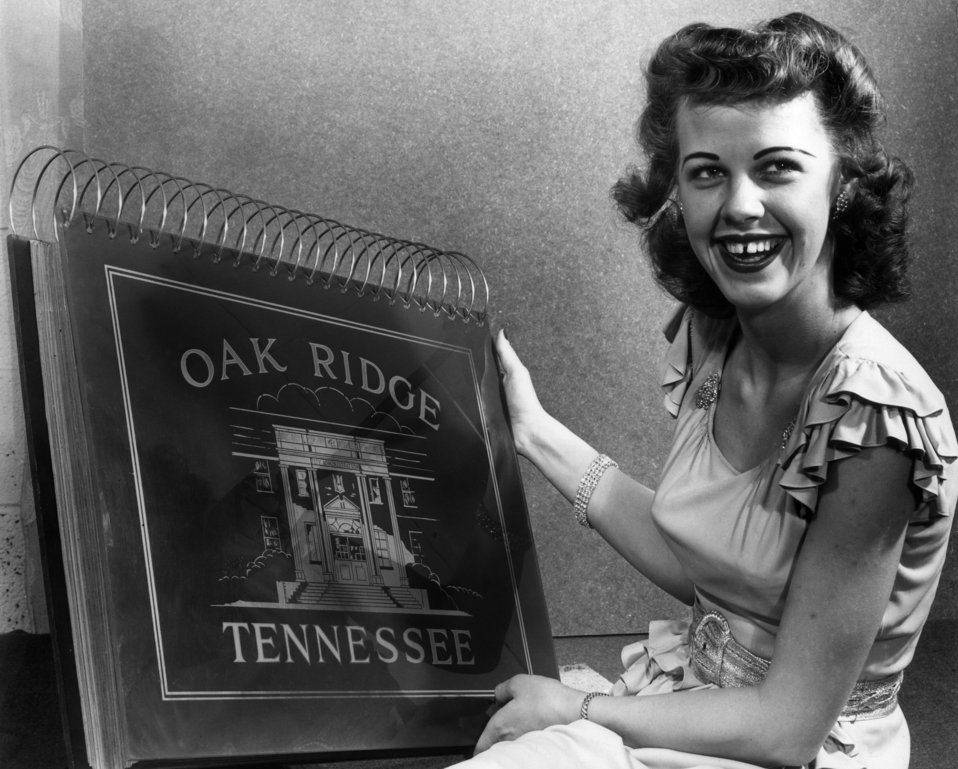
Oak Ridge Saftey Book Oak Ridge

3932-2 DOE photo by Ed Westcott
Oak Ridge Saftey Book Oak Ridge Tennessee 11-21-1947